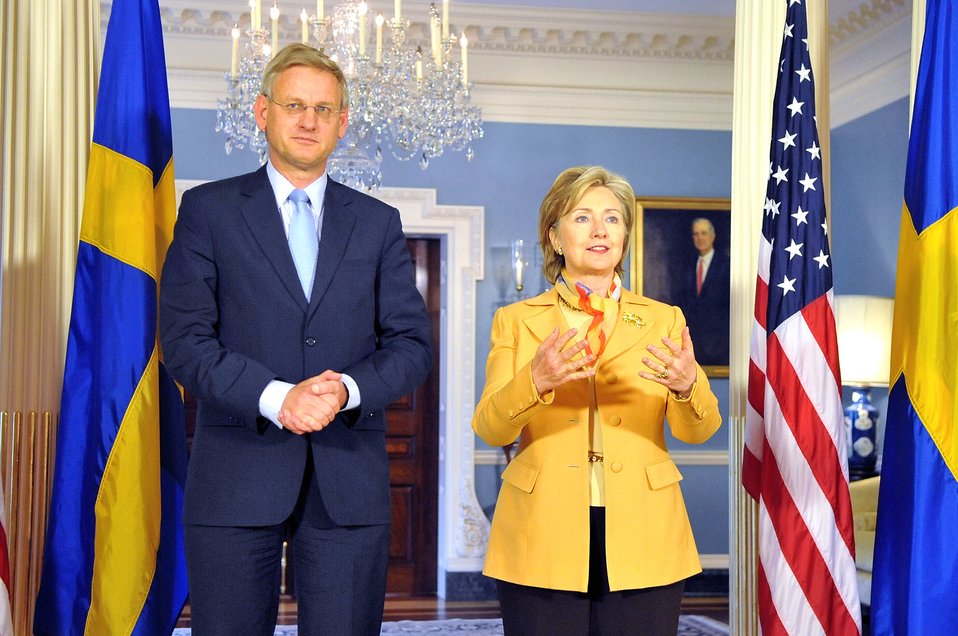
Secretary Clinton Meets With Swedish Foreign Minister

U.S. Secretary of State Hillary Rodham Clinton hosts a bilateral meeting with Swedish Foreign Minister Carl Bildt at the U.S. Department of State in Washington, DC May 5, 2009.